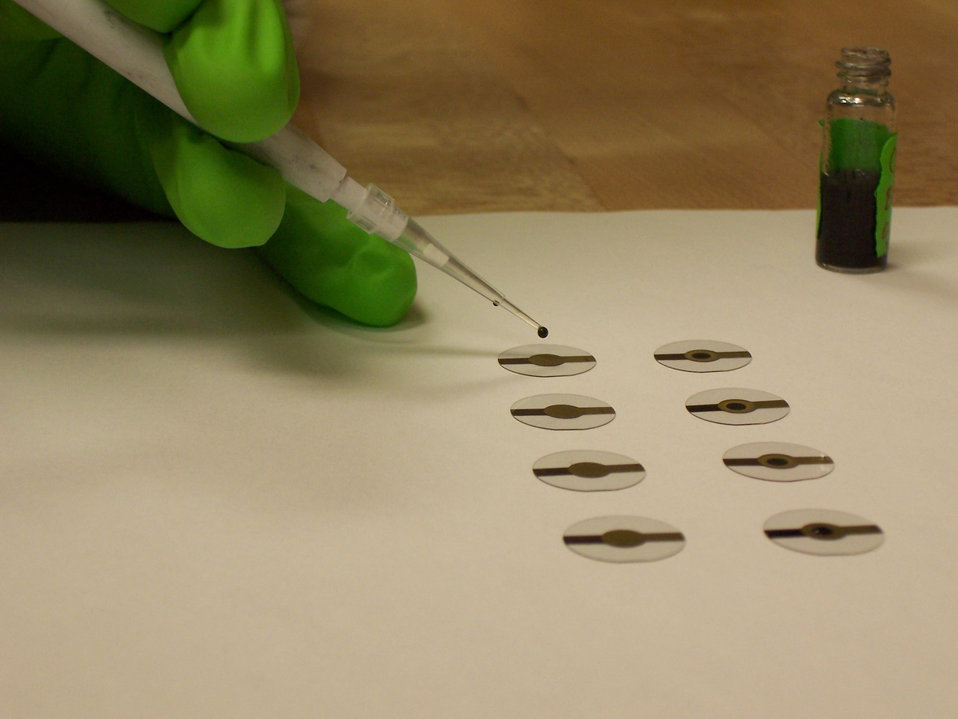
Quartz Crystal

NIST researcher prepares quartz crystal microbalance disks with samples of carbon nanotubes for for microscale thermogravimetric analysis. Typical sample sizes are about 2 microliters, or about 1 microgram.